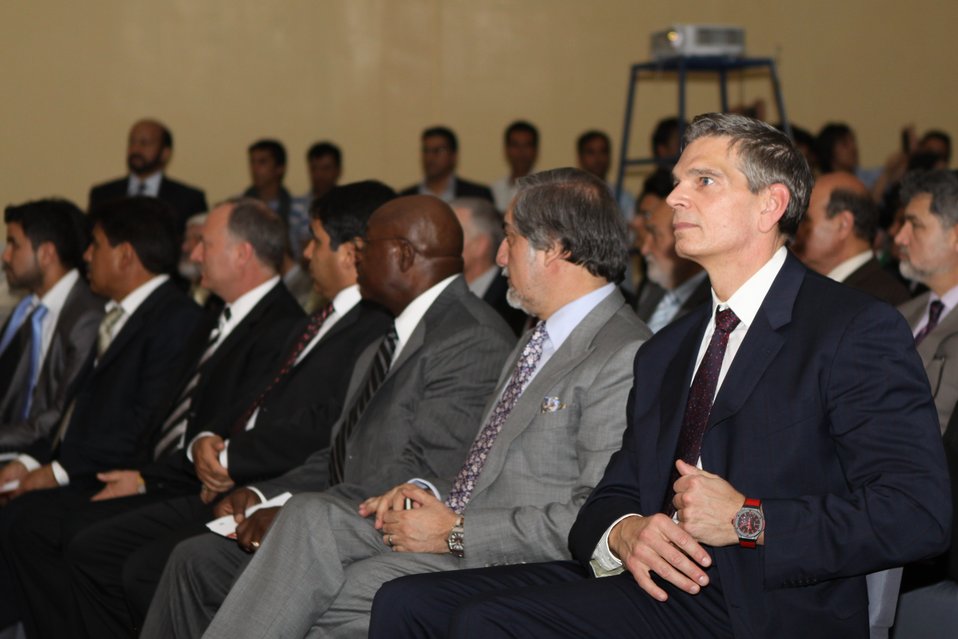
100526 AUAF Graduation 140